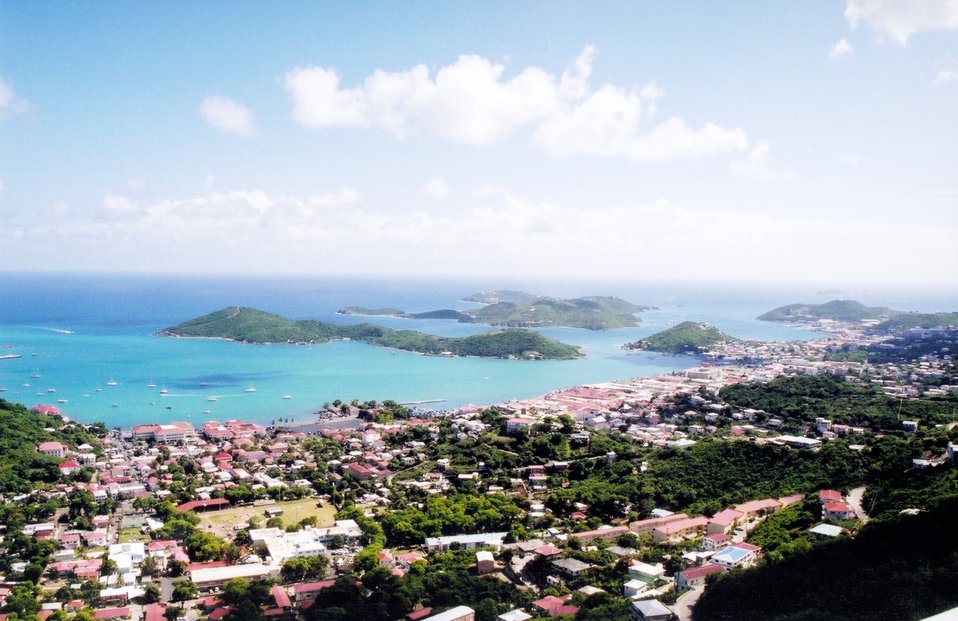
Charlotte Amalie Harbor on the south side of St. Thomas.